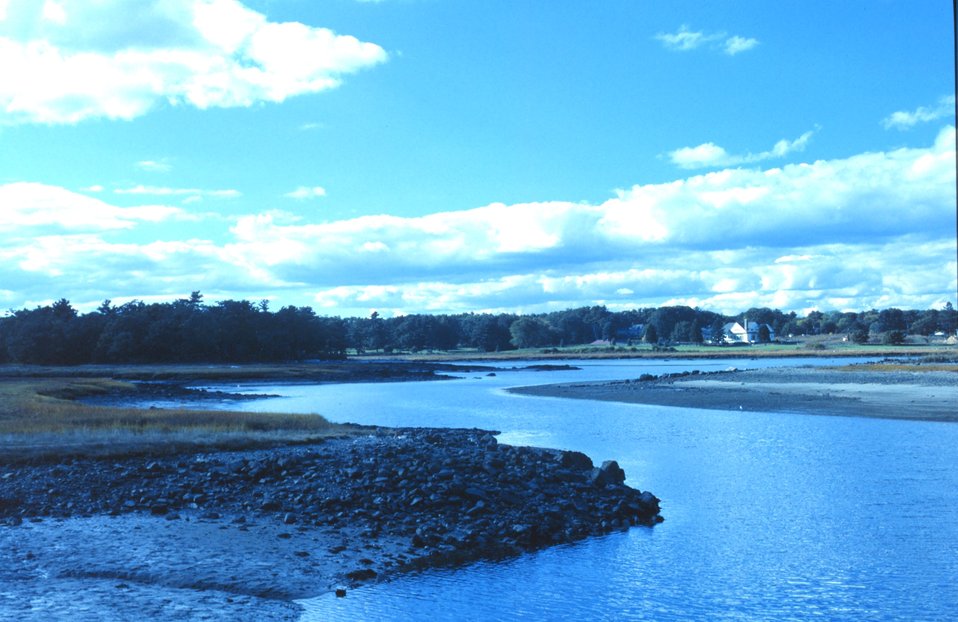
Part of the tidal stream pattern at Great Bay National Estuarine Research Reserve.